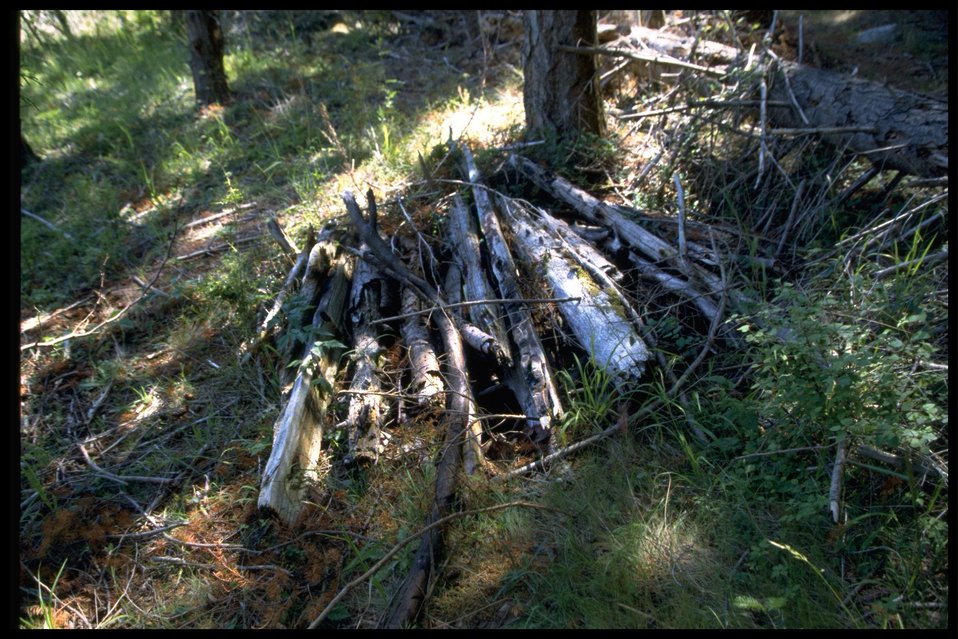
Down trees coving a possible cultural site at Watmough Bay.